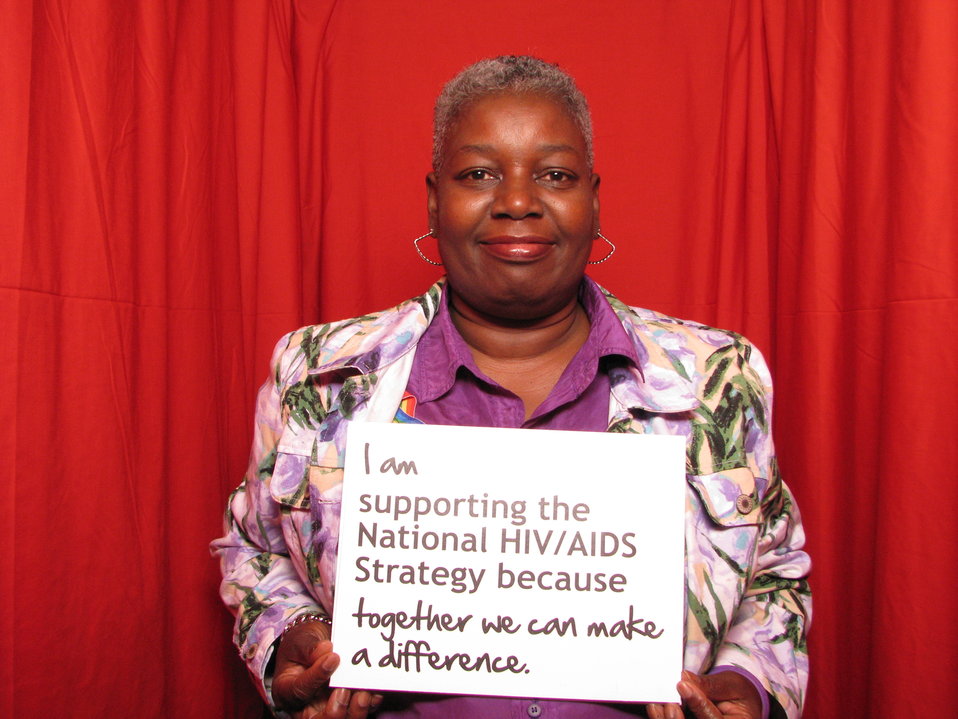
I am supporting the National HIV/AIDS Strategy because together we can make a difference.

From the AIDS.gov photo booth at the U.S. Conference on AIDS, September 2010 (Orlando, FL).